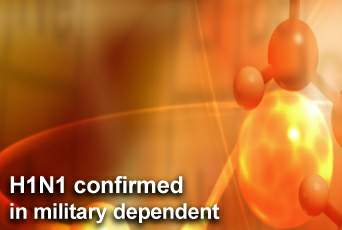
CDC confirms H1N1 case involving military dependent

Centers for Disease Control and Prevention officials confirmed one isolated case of the H1N1 flu virus involving an 11-year-old boy who is a military dependent at Nellis Air Force Base, Nev.